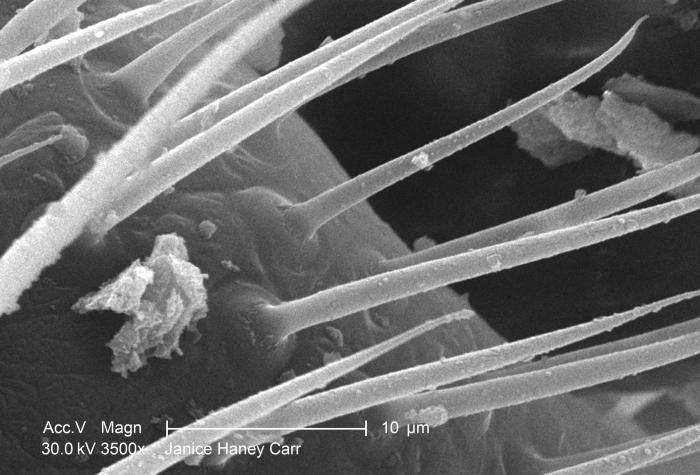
Under a high magnification of 3500X, this scanning electron micrograph (SEM) revealed some of the ultrastructural morphology found on the surface of an antenna situated on the head region of a termite found in Atlanta, Georgia. In this particular view, the distal broken tip of the sensory structure is visualized, and you'll note the socket-like depression in the bachground at which point the next antennal segment would articulate.